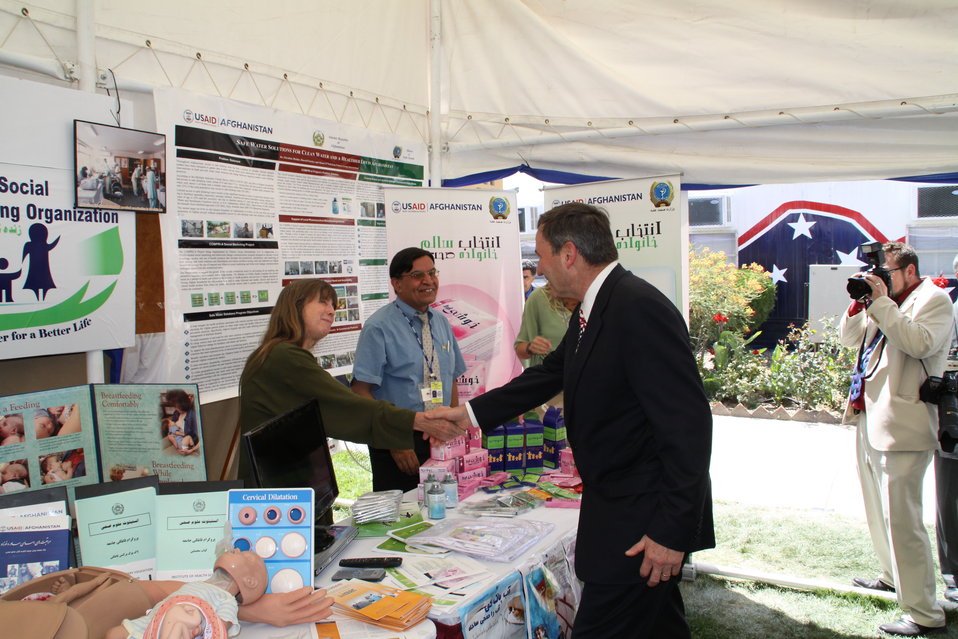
Kabul Official July 4th Celebration